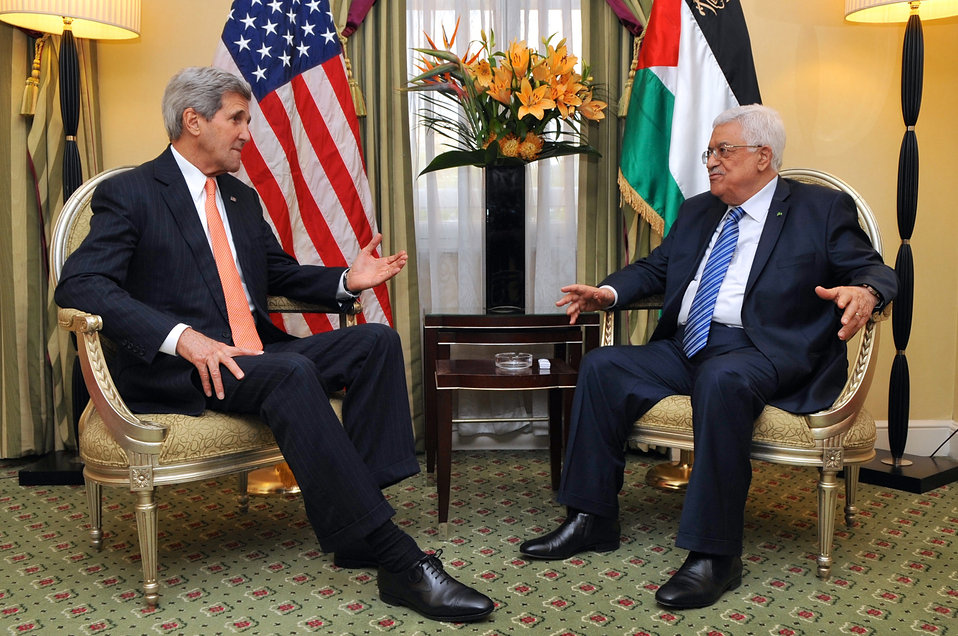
Secretary Kerry Meets With Palestinian Authority President Abbas in London

U.S. Secretary of State John Kerry chats with Palestinian Authority President Mahmoud Abbas in London, UK, on May 14, 2014, at the outset of a meeting focused on Middle East Peace.